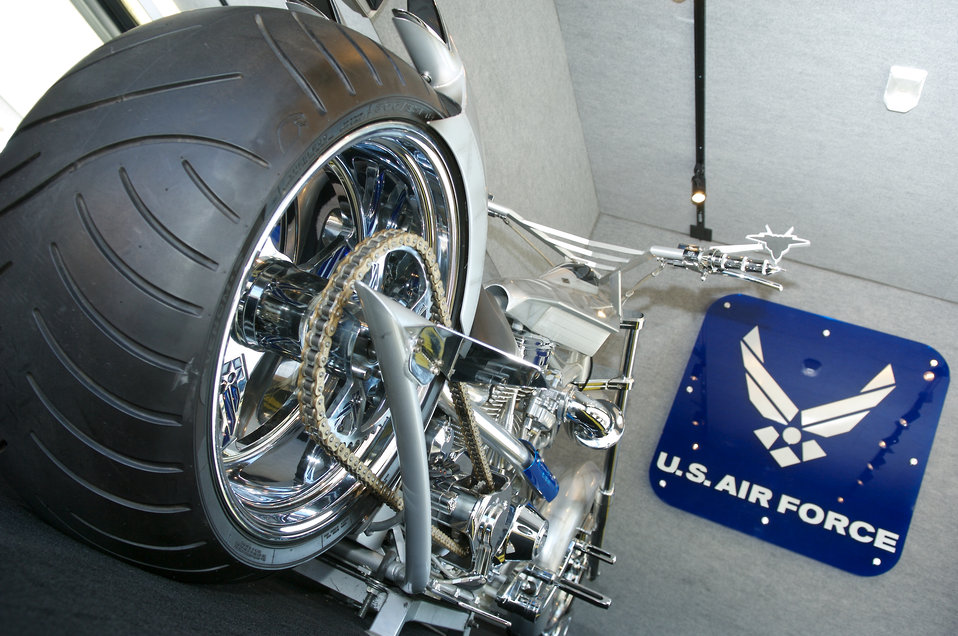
Hog wild

Air Force Orange County Chopper sits on display for Air Force Week in the Heartland Aug. 14 at Dillon Brothers Harley-Davidson in Omaha, Neb. The motorcycle has a 131 cubic inch engine that generates 150 horsepower. From end to end it stretches 10 feet 3 inches. It features a 6-speed Baker right-hand drive that puts power to the 300 series Avon Venom rear tire. The color scheme is based on the F-22 Raptor.